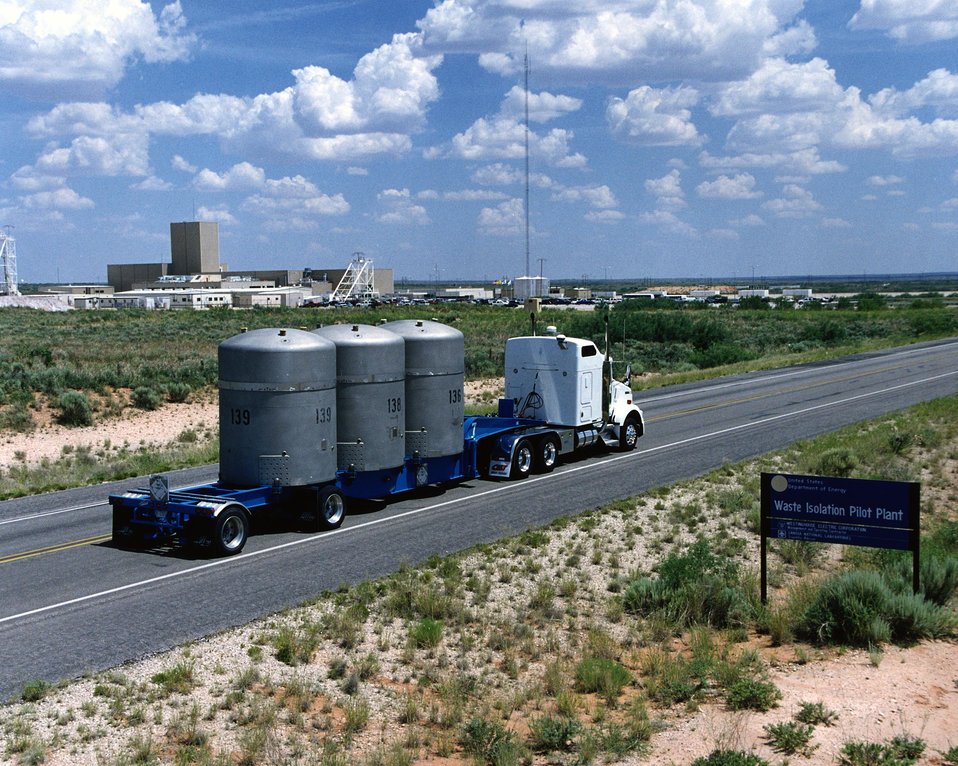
TRANSURANIC PACKAGE TRANSPORTER (TRUPACT-II) ENTERING WIPP.

THE TRACTOR-TRAILER AND SPECIALIZED CONTAINERS ARE DESIGNED TO SAFELY TRANSPORT RADIOACTIVE WASTE TO DOE'S WASTE ISOLATION PILOT PLANT NEAR CARLSBAD, NEW MEXICO.